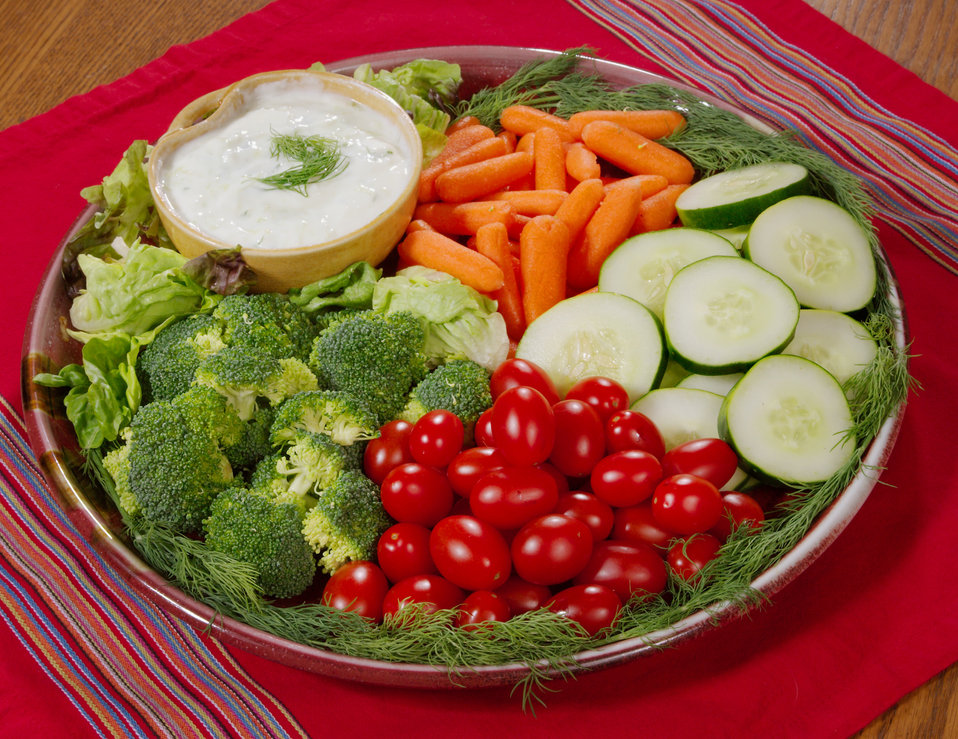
Here we have a platter of fresh vegetable, and a low-fat dip. The plated veggies included bright-red sweet grape tomatoes, uncooked broccoli, cucumber, uncooked baby carrots, Boston lettuce, and a garnish of aromatic dill. This is a great way to incorporate a healthy choice for luncheon or party guests.